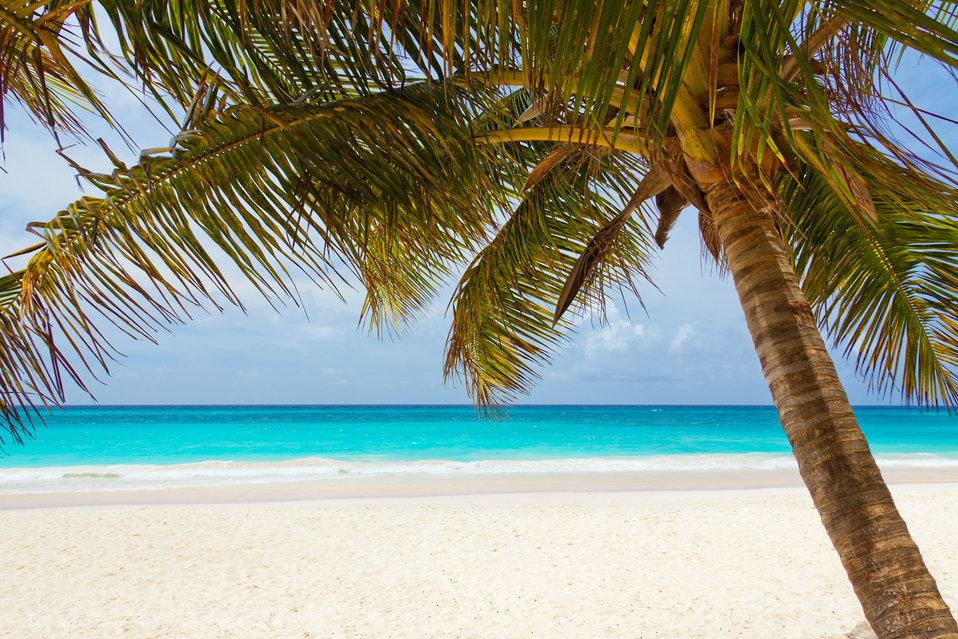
Tropical palm tree on the beach.